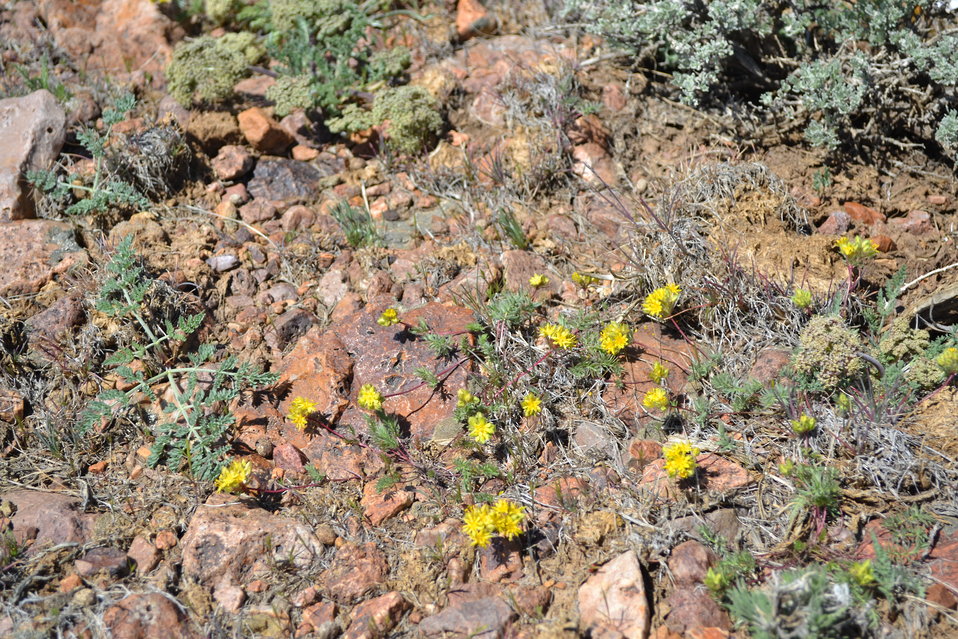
Webber Ivesia

Photo Credit: Sarah Kulpla/USFWS Webber ivesia (Ivesia webberi) is a member of the rose family. It is a low spreading, perennial forb approximately ten inches across with greenish-gray foliage and dark red, wiry stems. The leaves are mostly clustered around the base of the stems, with four to eight pairs of leaflets crowded at the tip, and generally covered with long, silky grayish hairs. Flowering typically begins in May and extends through June. The small bright yellow flowers occur in groups. The whole plant becomes reddish-tinged late in the season. This plant occurs in Washoe and Douglas Counties in Nevada and in Lassen, Plumas, and Sierra Counties in California.